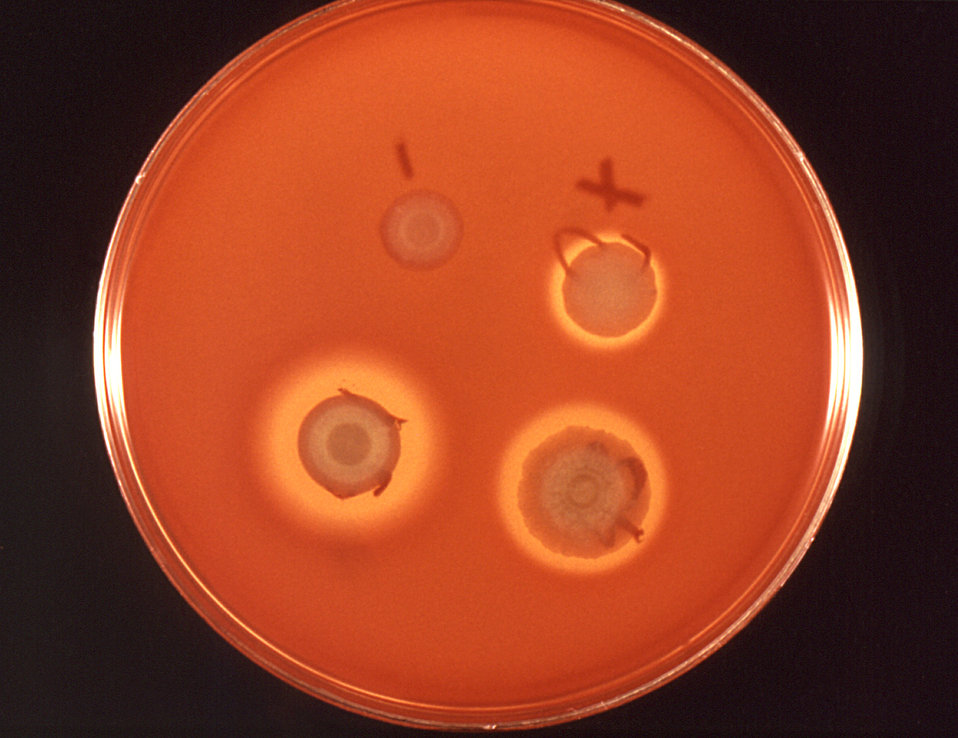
This inoculated human blood agar culture plate cultivated colonial growth of Gram-negative, rod-shaped and facultatively anaerobic Serratia marcescens bacteria.